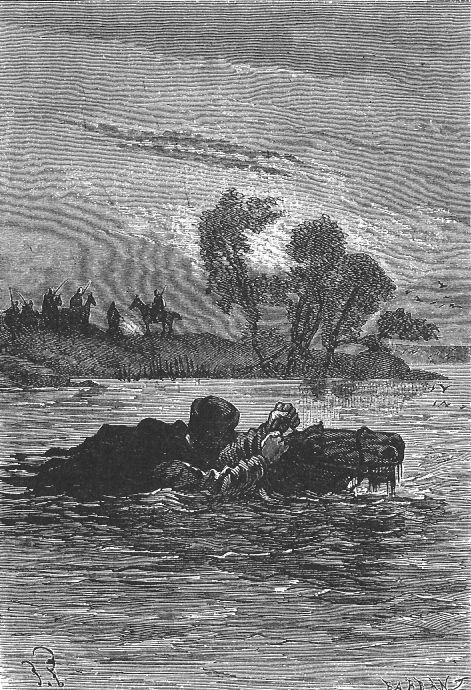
An illustration from the novel 'Michael Strogoff: The Courier of the Czar' by Jules Verne drawn by Jules Férat. Polski: Ilustracja powieści Juliusza Verne'a 'Michał Strogow, kurier carski' autorstwa Julesa Férata. Français : 'Michel Strogoff. Le courier du tzar', Jules Férat. Français : Le cheval de Michel Strogoff, frappé au flanc…